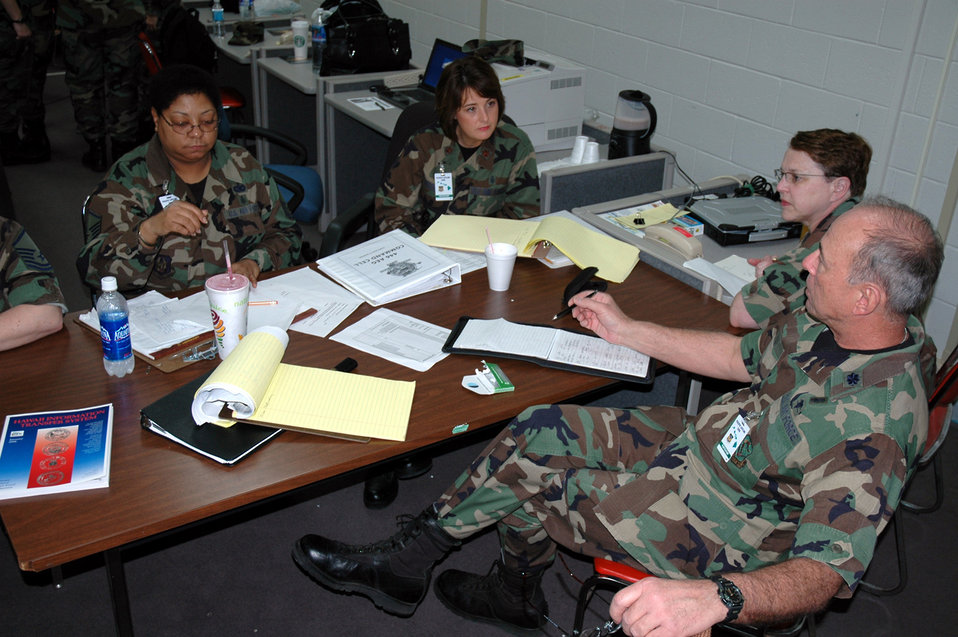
Command Cell provides oversight during Pacific Lifeline

Master Sgt. Rita Herrington, Maj. Michelle Emerson , Lt. Col. Julia Scott, and Lt. Col. Pat Pound, the Aeromedical Command Cell for the Pacific Lifeline exercise, discuss operations Jan. 31. Pacific Lifeline is a humanitarian assistance disaster response exercise taking place over three Hawaiian Islands Jan. 26 to Feb. 9. The command cell provides oversight for all aeromedical operations, the mobile aeromedical staging facility, the aeromedical liaison team, and the aeromedical operations team during the exercise. More than 900 Department of Defense personnel are participating in the exercise. The command cell members are all from the 446th Aeromedical Evacuation Squadron.